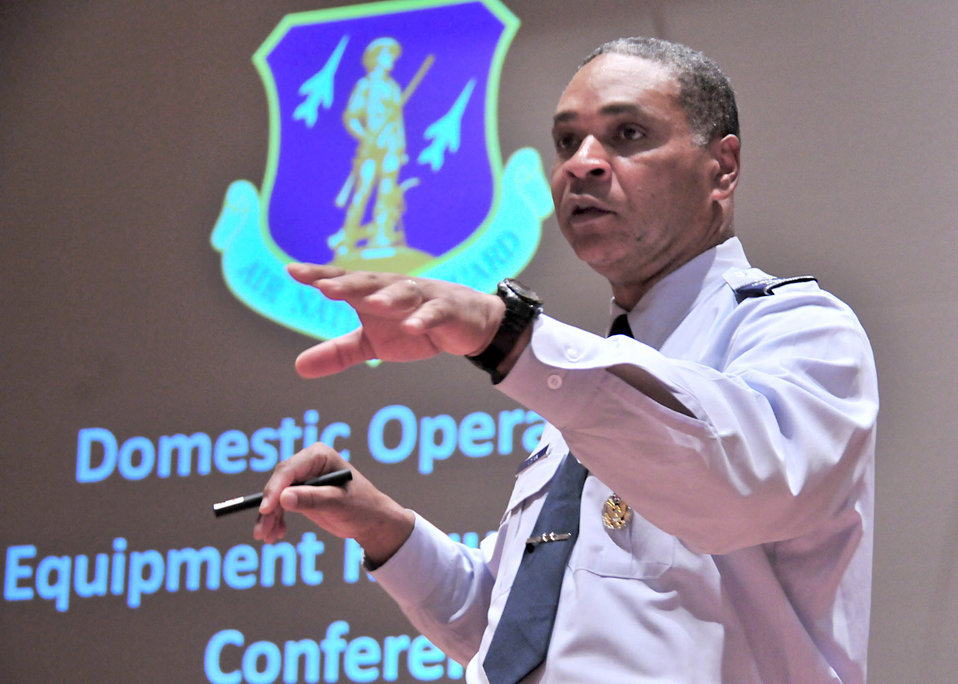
Air Guard strengthens stance for homeland defense, civil support

Maj. Gen. Garry C. Dean addresses about 450 guardmembers during the Air Guard's Domestic Operations Equipment Requirements Conference Aug. 2 to 6, 2010 in Baltimore. General Dean is the commander of 1st Air Force and commander of Continental U.S. North American Aerospace Defense Command Region.